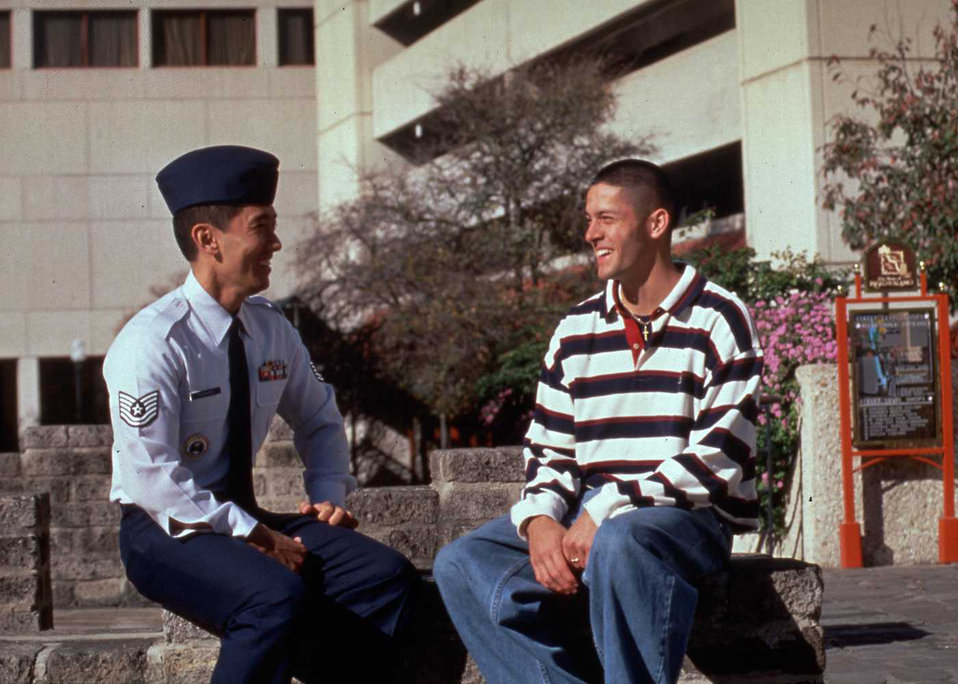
Blue Again?

RANDOLPH AIR FORCE BASE, Texas -- Air Force recruiters are looking for former military members who might be interested in returning to active duty. The Air Force hopes to attract thousands of former airmen, soldiers, sailors and Marines to return to active duty in fiscal 2001.